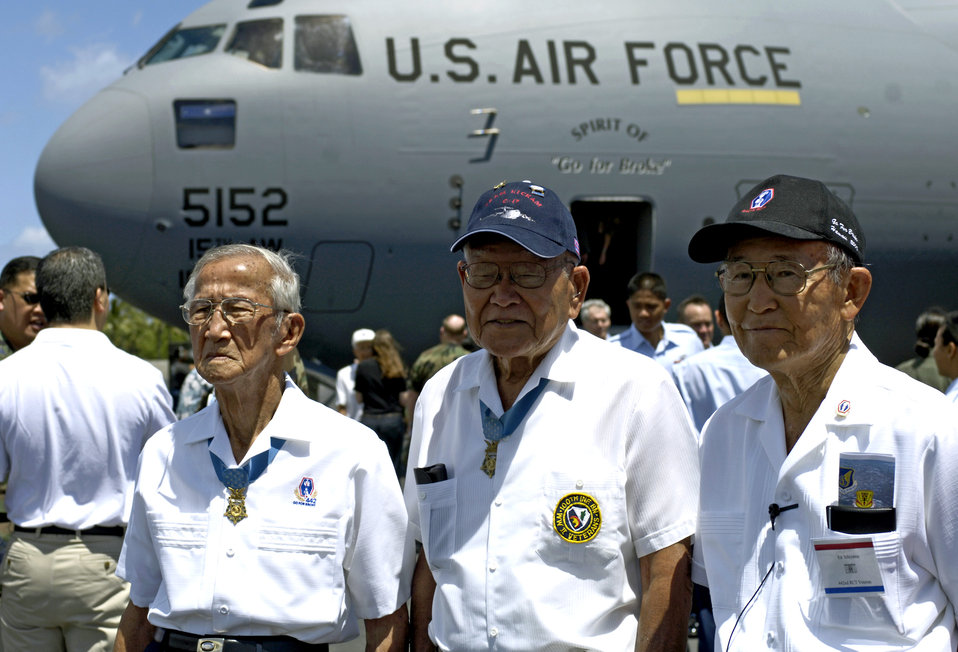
Hickam honors World War II vets with new C-17

Barney Hajiro and Shizuya Hayashi, Medal of Honor recipients, and Ed Ichiyama pose in front of a C-17 Globemaster III named